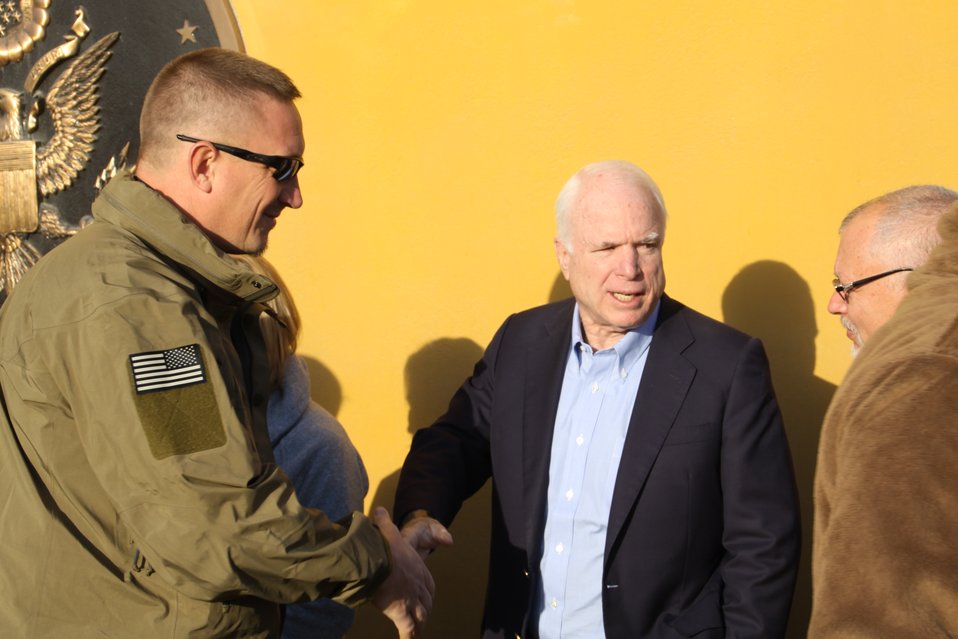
Senator McCain